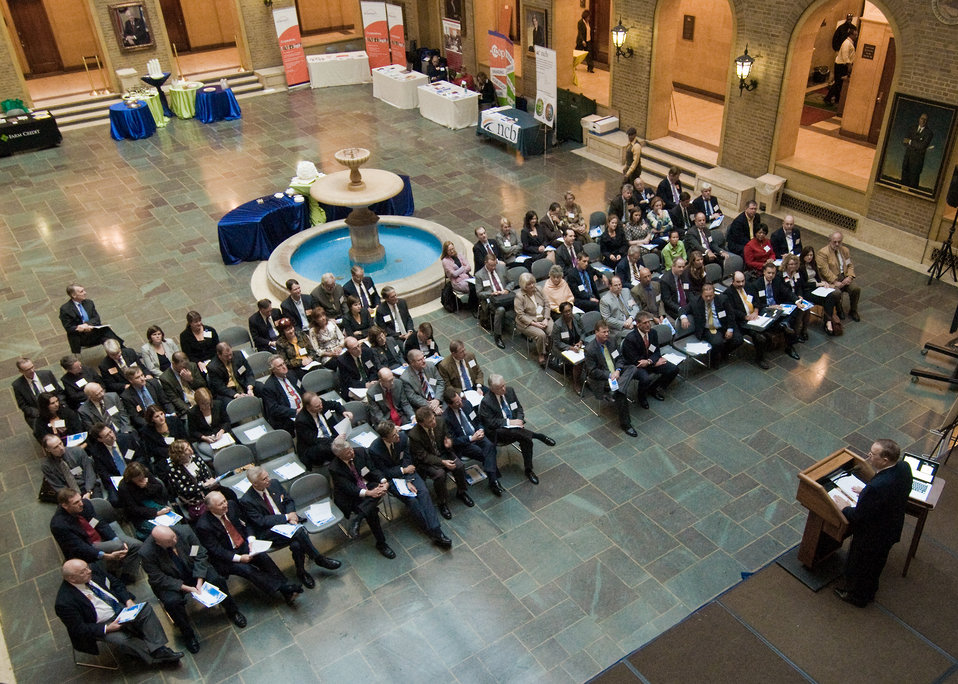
Dallas Tonsager, Undersecretary Rural Development welcomes and offers opening comments on the celebration of October as National Co-op Month at an event at the Department of Agriculture, Tuesday, October 5, 2010 in Washington, DC. USDA Photo 10di1517-14 by Bob Nichols.